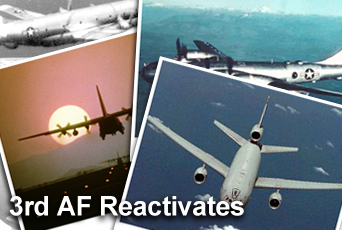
3rd Air Force Reactivates

At a ceremony Dec. 1 at Ramstein Air Base, Germany, 3rd Air Force was reactivated and Lt. Gen. Robert D. Bishop Jr was appointed commander. The numbered Air Force will plan combat and humanitarian operations in the U.S. Air Forces in Europe area of responsibility, which includes Europe and Africa.